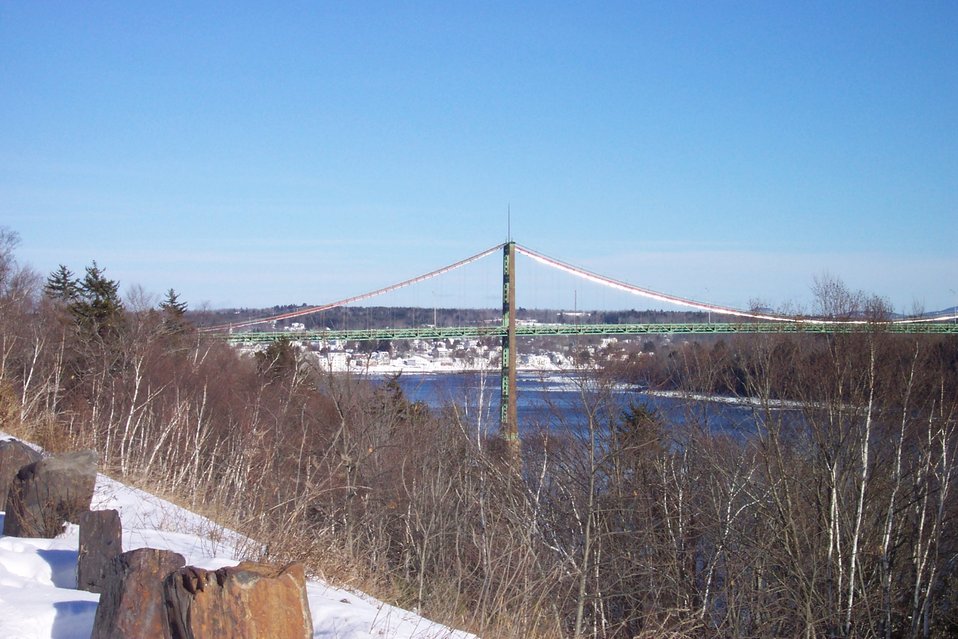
South pier of the Waldo-Hancock suspension bridge across the Penobscot River.